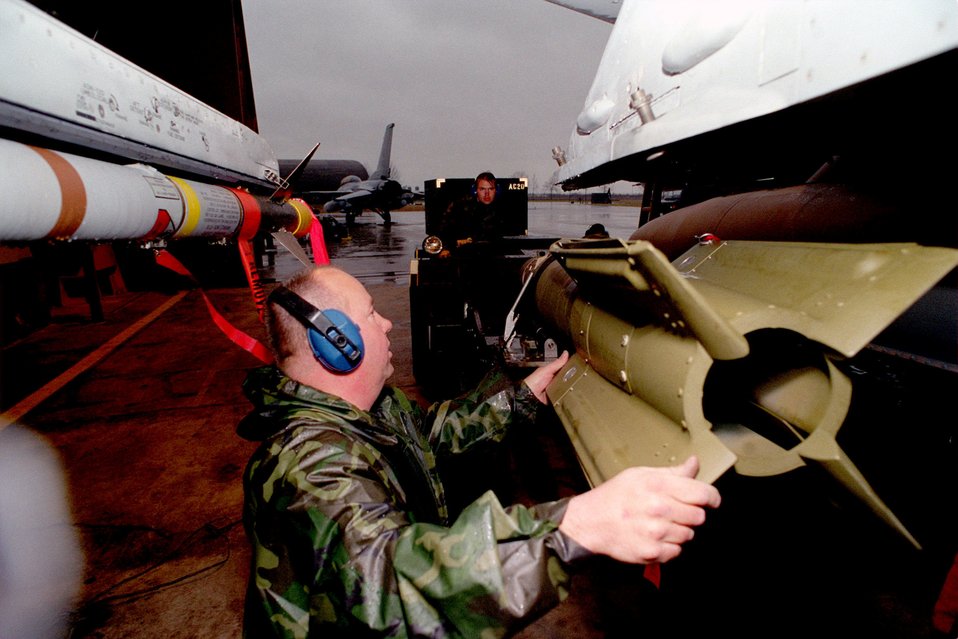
Operation Allied Force

A weapons tecnician uploads an F-16 Fighting Falcon at Aviano Air Base, Italy, for the next sortie in support to NATO in the Operation Allied Force, March 27, 1999.